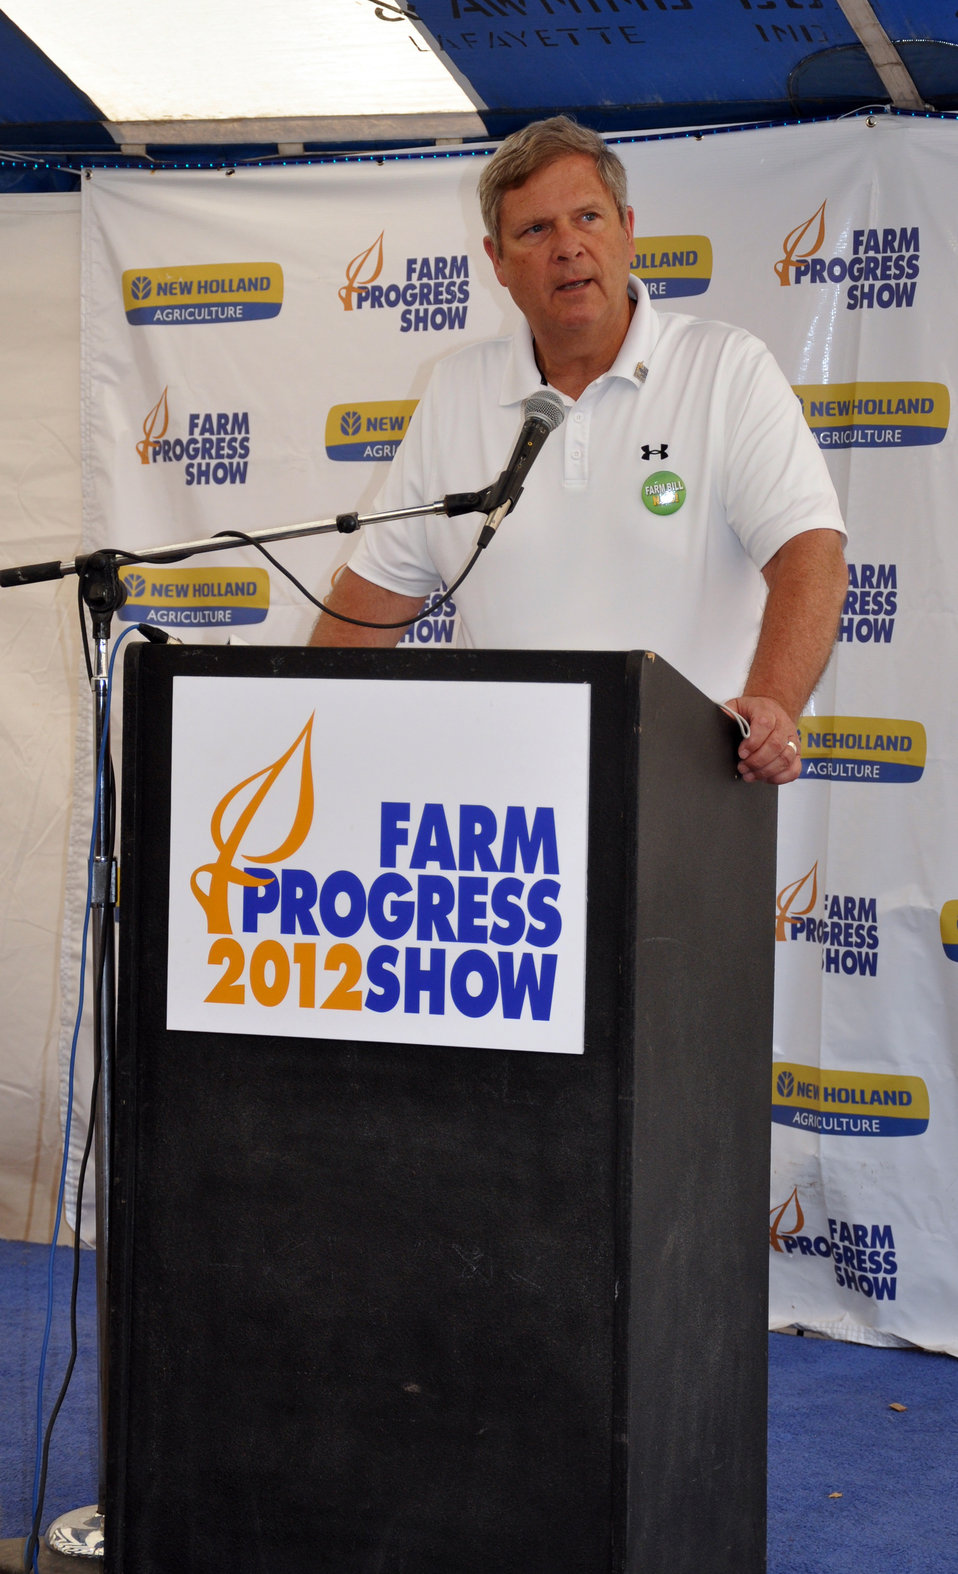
Agriculture Secretary Tom Vilsack visits with the media during the 2012 Farm Progress Show in Boone, Iowa, on Aug. 30, 2012. Vilsack announced new USDA grants for Beginning, Socially Disadvantage Farmers, and Historically Underserved Farmers.